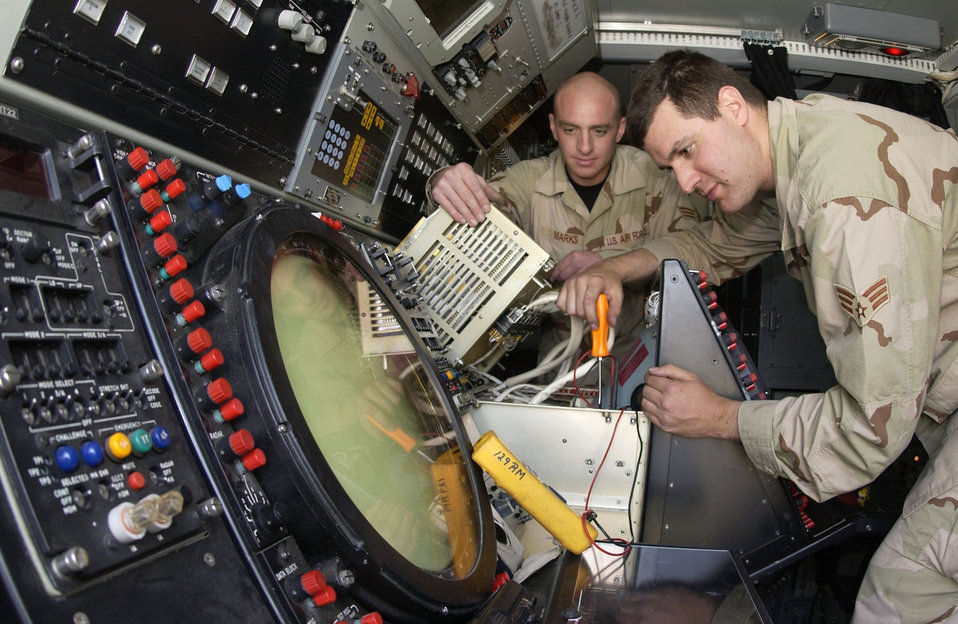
I can see you

Senior Airmen Timothy Marks and Christopher Newton test a display unit on an AN/TPS-75 air surveillance radar Feb. 27 at Kirkuk Regional Air Base, Iraq. The AN/TPS-75 allows air battle managers located at Balad AB, Iraq, to remotely see aircraft flying in northern Iraq. Both Airmen are ground radar systems techinicians with the 727th Expeditionary Air Control Squadron.